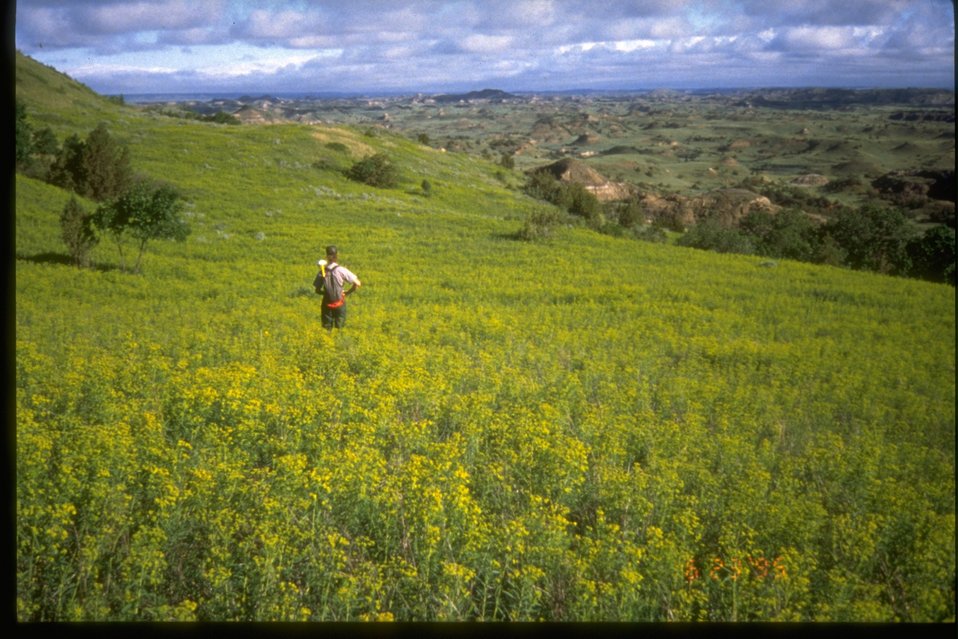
Expanse of leafy spurge in the Roosevelt National Park.